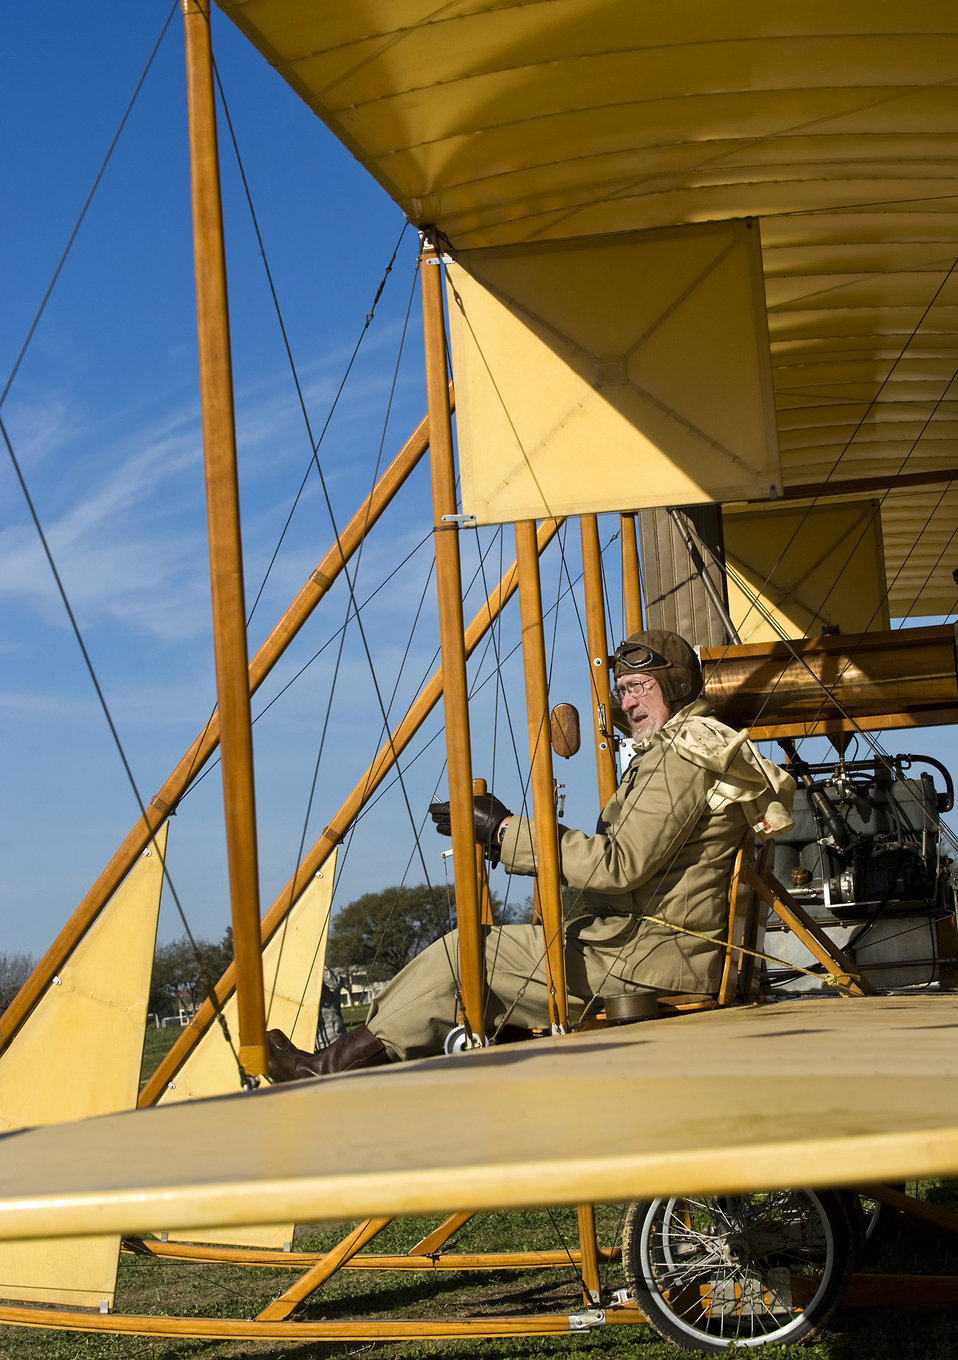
History comes alive

Don Gum, Wright